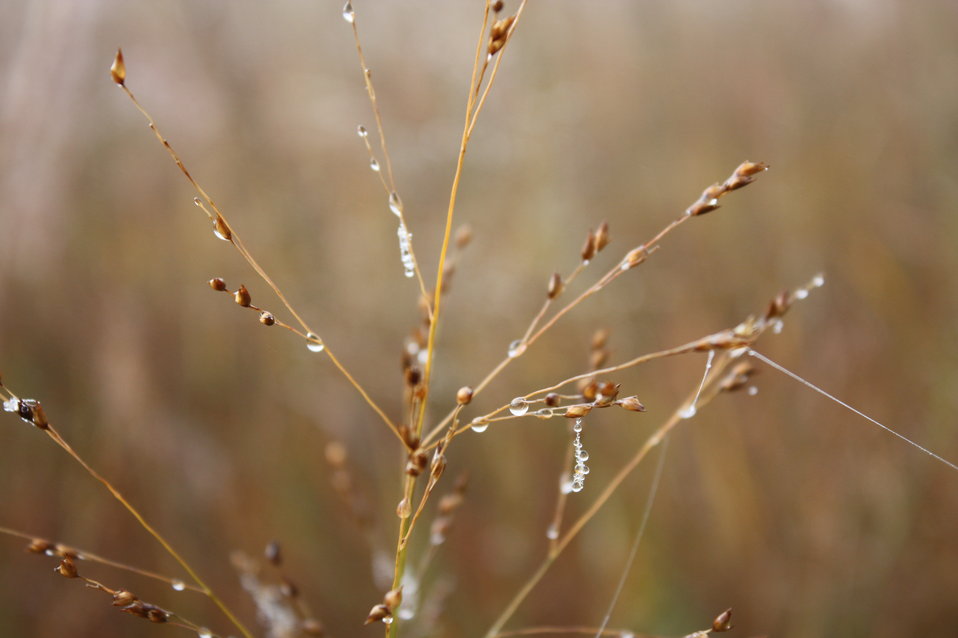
Drops of Dew

Dewdrops hang suspended from switchgrass (Panicum virgatum) at Waubay National Wildlife Refuge in South Dakota.

Credit: Laura Hubers / USFWS

Photo Contest Entry #163